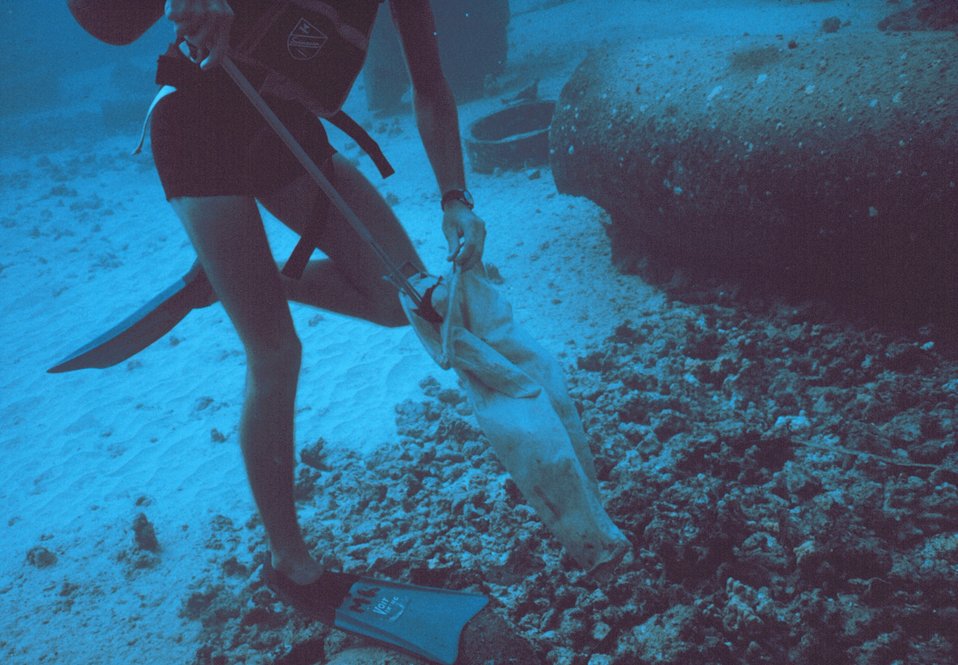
Collecting fish by Hawaiian style spear for determining stomach contents.